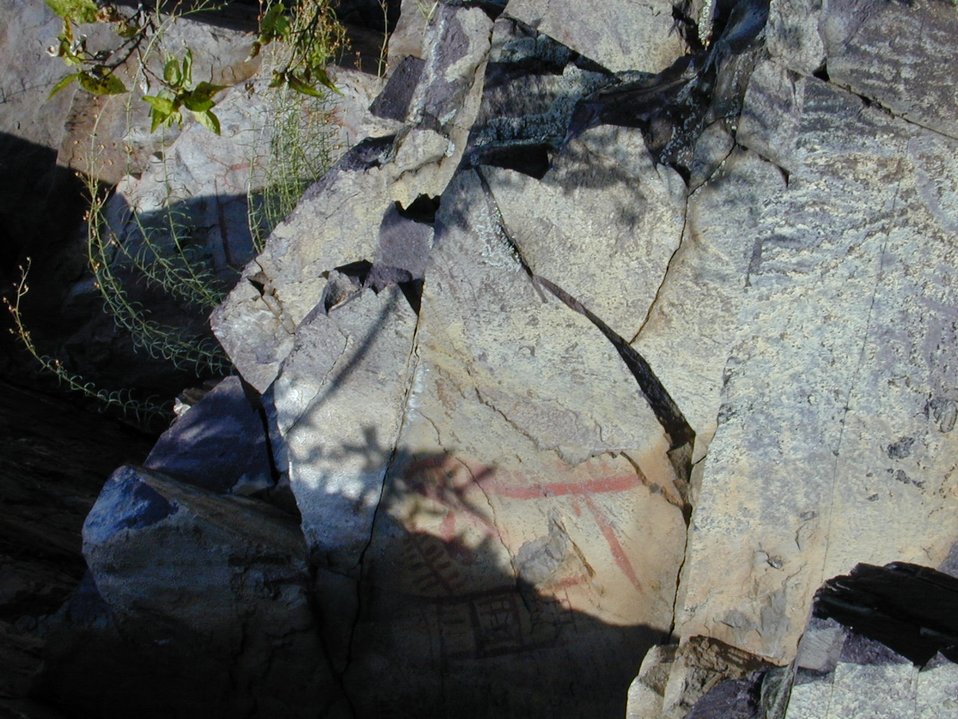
Cultural resources Petroglyphs on Lower Salmon River Cottonwood Field Office UCSC Upper Columbia Salmon Clearwater District